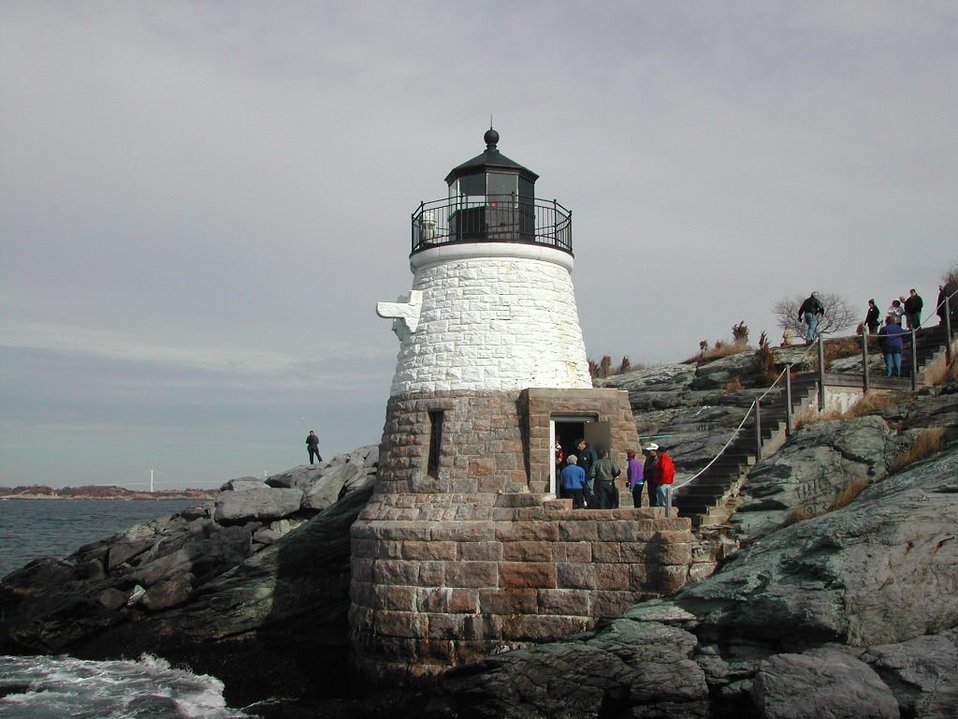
Castle Hill Light